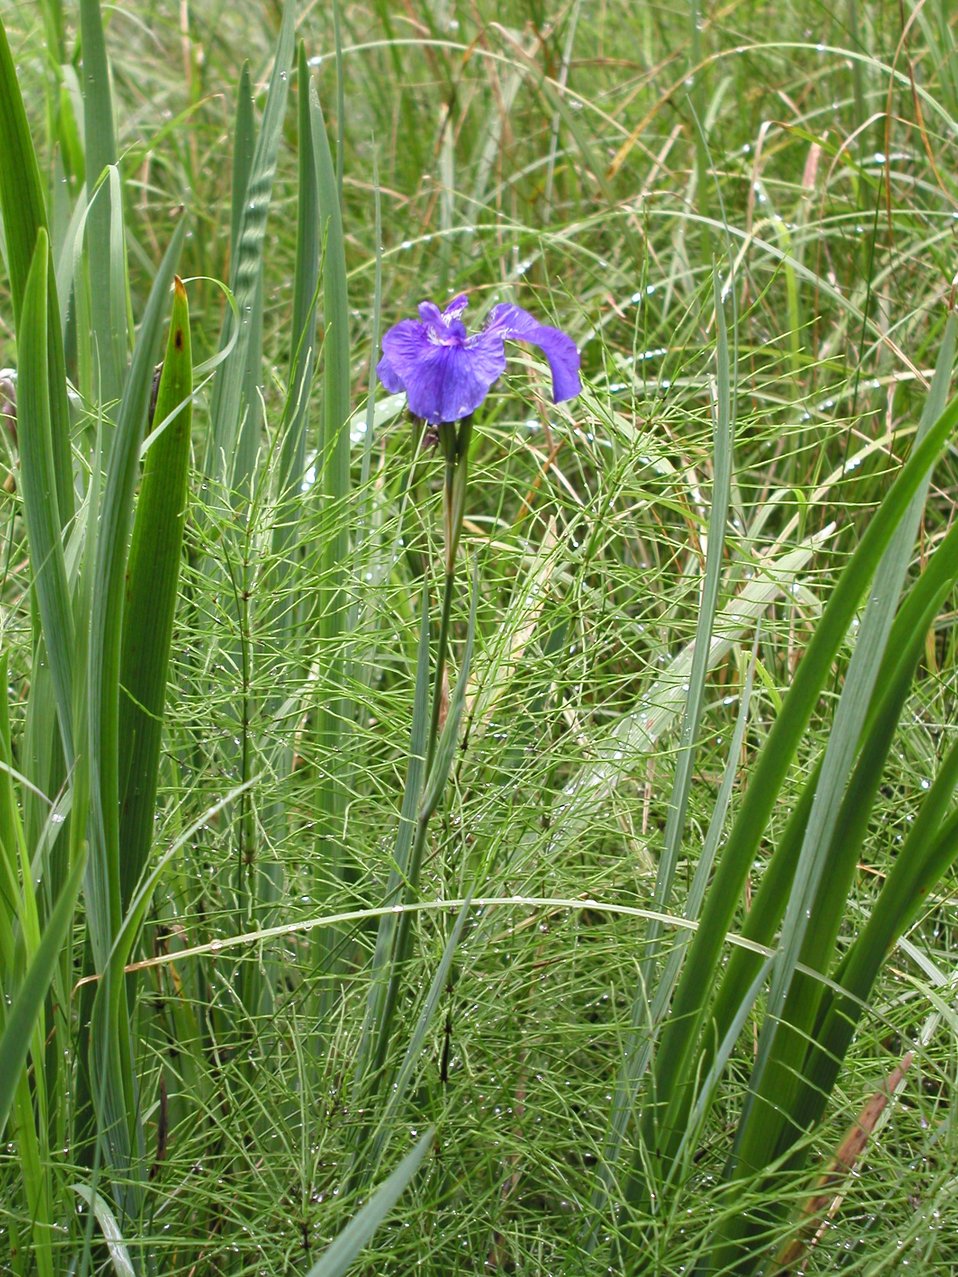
Swamp iris